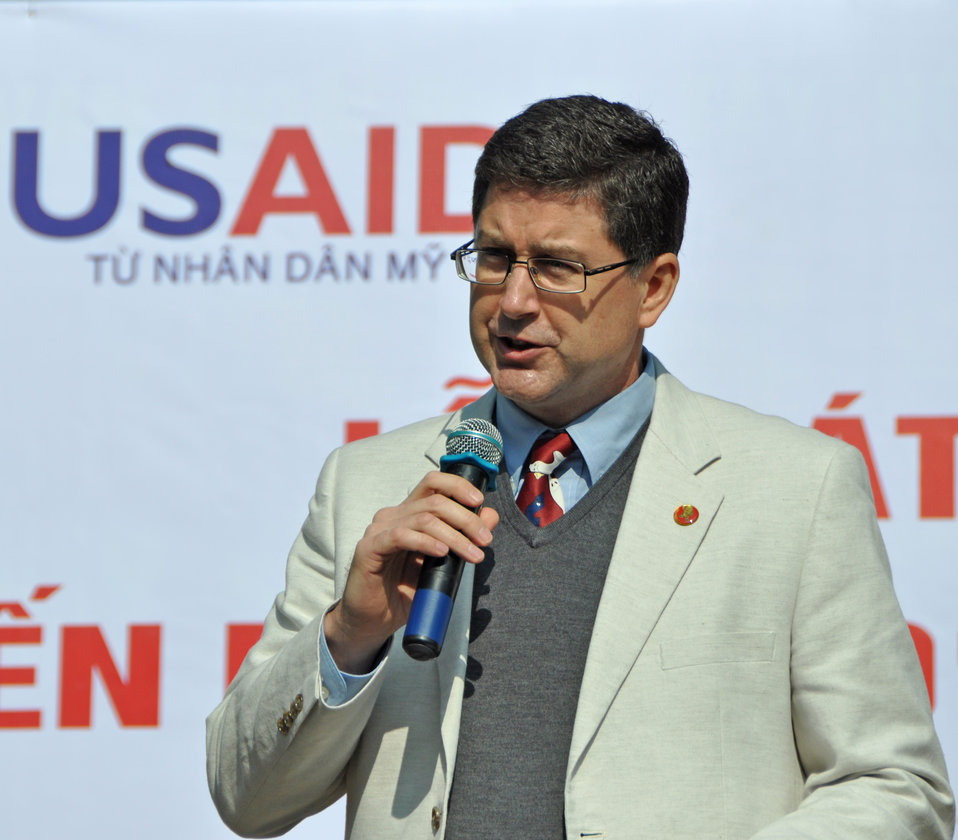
100% Condom Use Campaign Launch, Dec. 2, 2011

USAID Office of Health Director Jonathan Ross